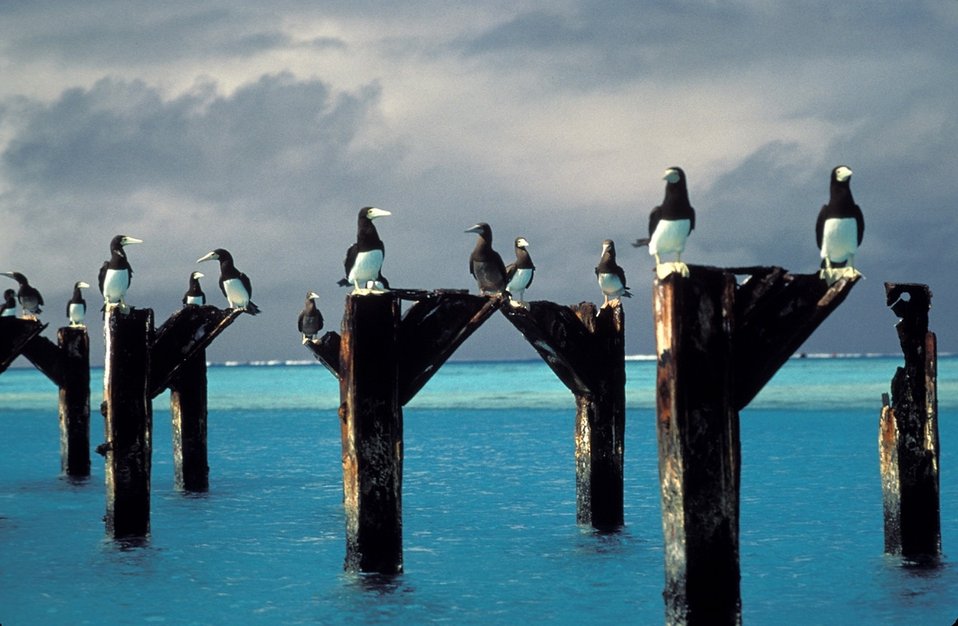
Brown boobies atop pier posts at Johnston Atoll NWR

Brown boobies stake out positions atop the posts of an old pier at Johnston Atoll National Wildlife Refuge in the Pacific.